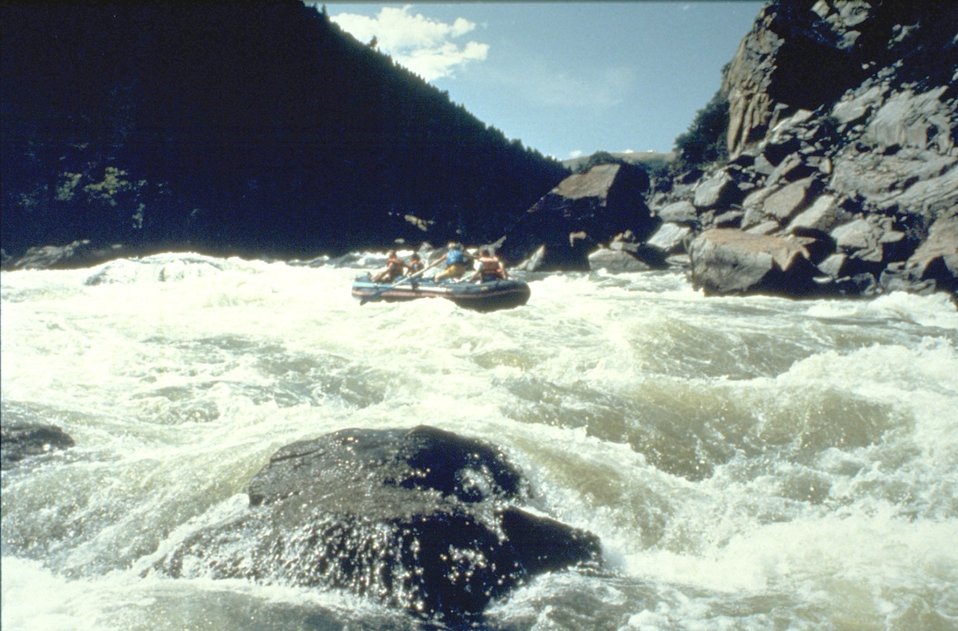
Madison River rapids